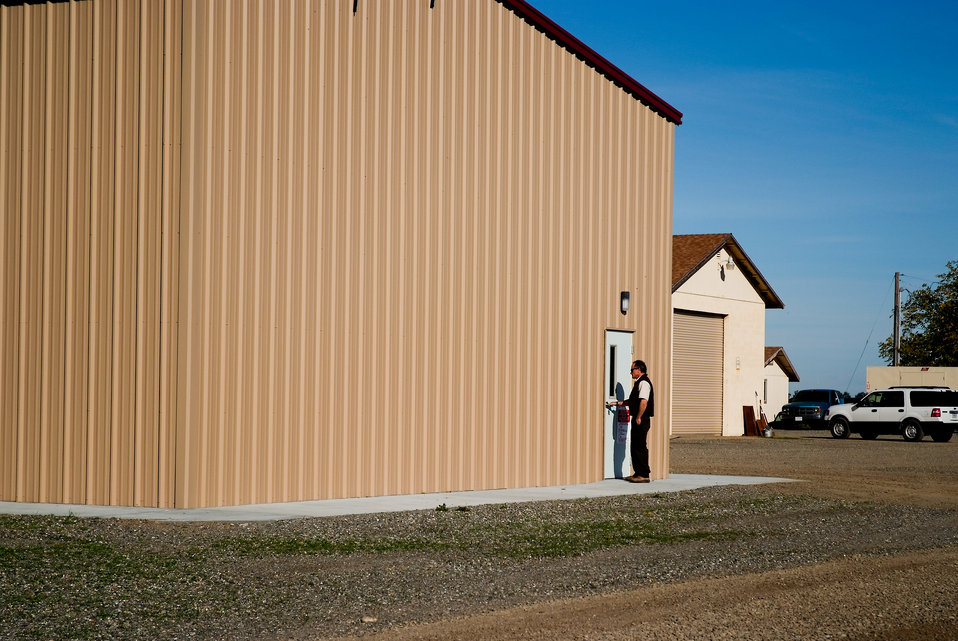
Sacramento River NWR shop building

Sacramento River National Wildlife Refuge. New storage building at Llano Seco Unit. This building was built with American Recovery & Reinvestmant Act funds [project 4141-R8GX].